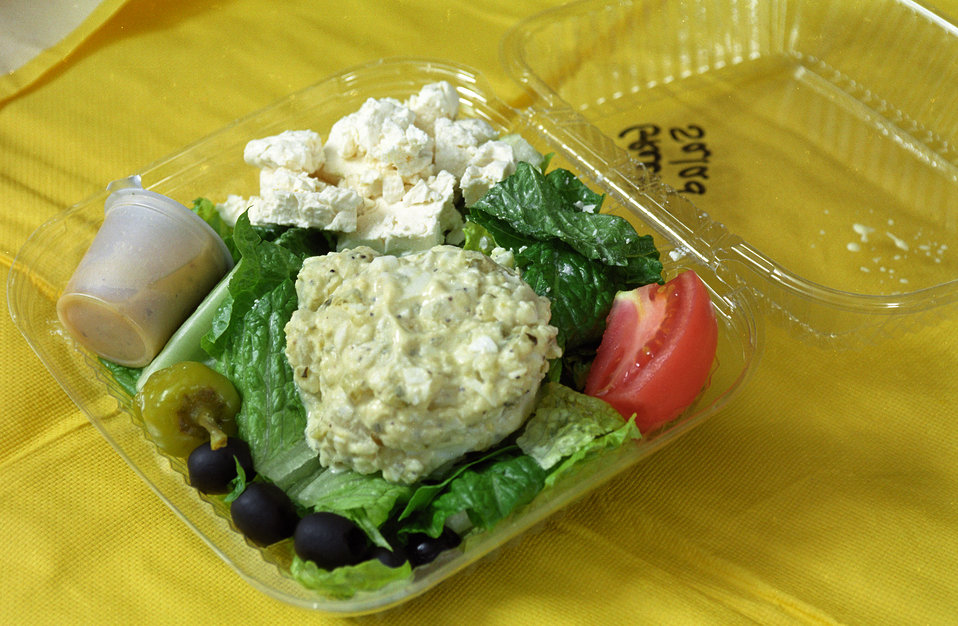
A nutritious lunch is prepared at a school in St. Petersburg, FL on January 15, 2003. The U.S. Department of Agriculture's (USDA) Food and Nutrition Service (FNS) Fresh Fruit and Vegetable Program (FFVP) was introduced to schools in 2003. The FFVP provides all children in participating schools with a variety of free fresh fruits and vegetables throughout the school day. It is an effective and creative way of introducing fresh fruits and vegetables as healthy snack options. The FFVP also encourages schools to develop partnerships at the State and local level for support in implementing and operating the program. The Goal of the FFVP is to create healthier school environments by providing healthier food choices, expand the variety of fruits and vegetables children experience, increase children’s fruit and vegetable consumption, and make a difference in children’s diets to impact their present and future health.